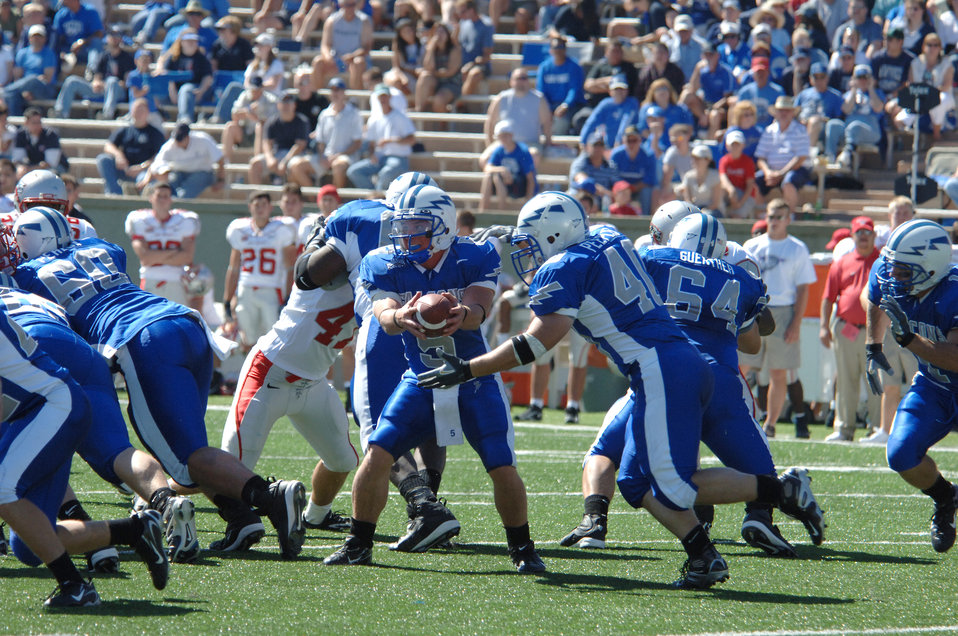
Air Force beats New Mexico 24-7

Air Force quarterback Shaun Carney hands off to fullback Scott Peeples. The fullback carried 11 times for 33 yards, as the Falcons' triple-option rushing offense netted 262 yards against New Mexico in Sept. 30's 24-7 victory. The Falcons improved their season record to 2-1 and stand at 2-0 in the Mountain West Conference. Air Force's next opponent is Navy Oct. 7 at Falcon Stadium.